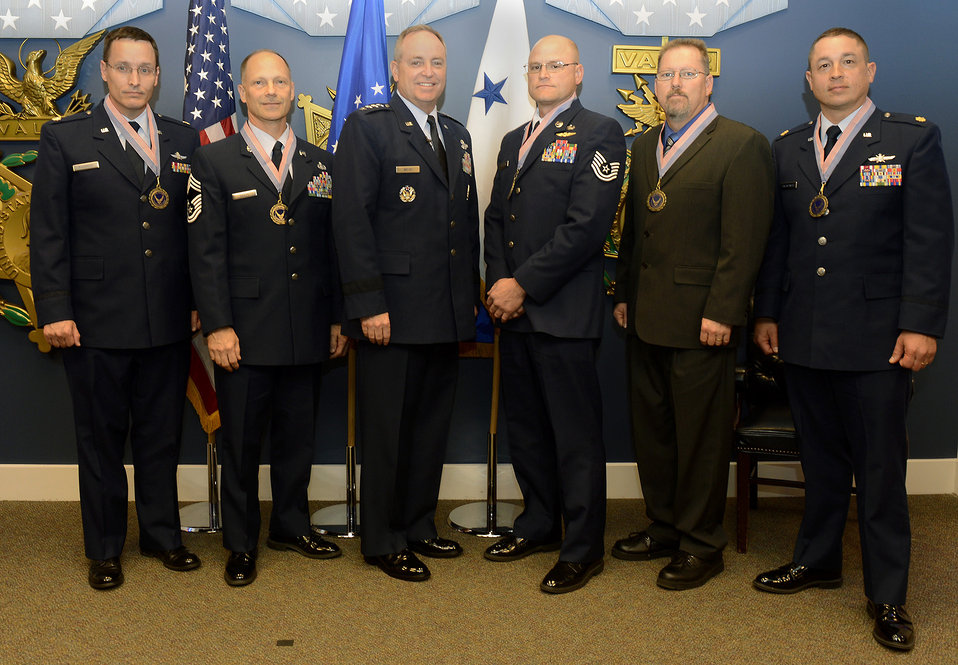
CSAF Team of Excellence awards

Members of the first runner-up of the 2012 Chief of Staff Team Excellence Award, the BRAC AFRL Radar Relocation Project Management Team from Stewart Air National Guard Base, N.Y., are congratulated by Air Force Chief of Staff Gen. Mark A. Welsh III in a Pentagon ceremony on Nov. 27, 2012.